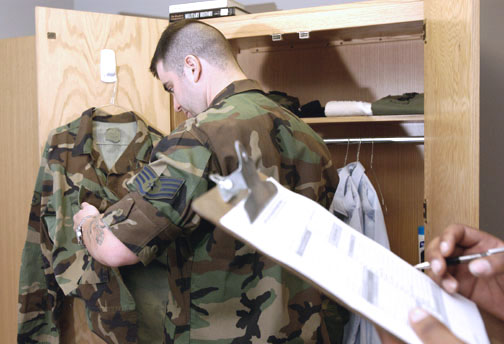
There's no quitting in the Air Force

RAMSTEIN AIR BASE, Germany - Staff Sgt. Joseph Gallina inspects a candidate's room during Ramstein's Area Motivational Program. This 30-day program is used by commanders to